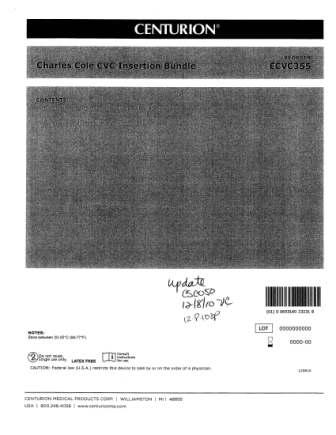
RECALLED - Convenience kits which contain bacteriostatic sodium chloride solution by American Regent

April 1, 2011 - Product Recall - Centurion Medical Products Initiates Voluntary Recall of Customized Convenience Kits (including select Central Venous Catheter, PICC Insertion, and VAD Trays) that contain American Regent’s Bacteriostatic Sodium Chloride Injection, USP, 0.9% 30 mL Multiple Dose Vials.